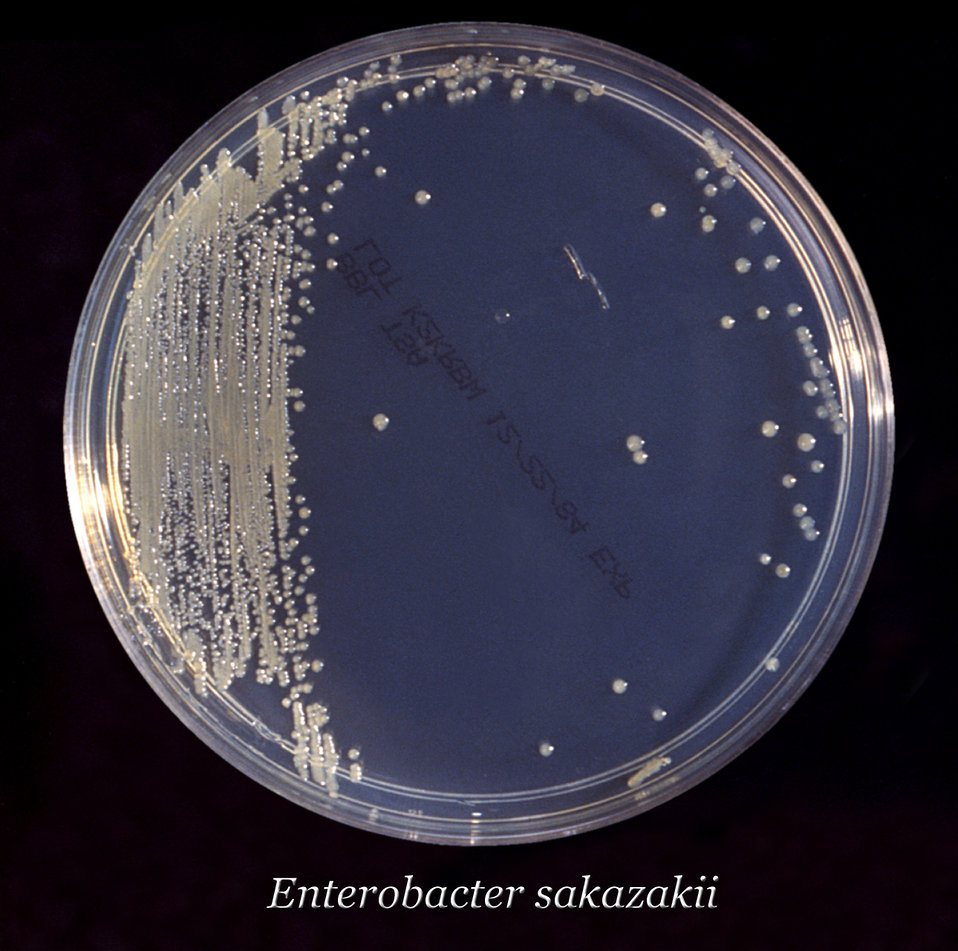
This inoculated trypticase soy broth (TSB) agar cultivated colonial growth of Enterobacter sakazakii bacteria that were slightly yellowish in color.